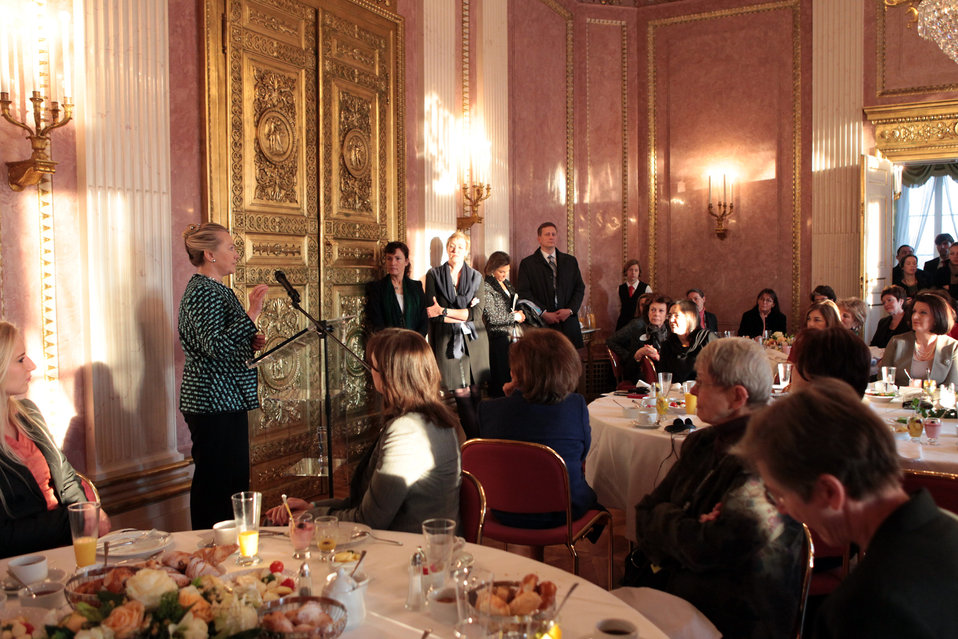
Secretary Clinton Delivers Remarks at a Breakfast

U.S. Secretary of State Hillary Rodham Clinton speaks at a breakfast sponsored by Women in International Security Deutschland (WIIS.de) and the Hanns-Seidel Foundation, at the Prinz Carl Palais in Munich, Germany, on February 5, 2012.